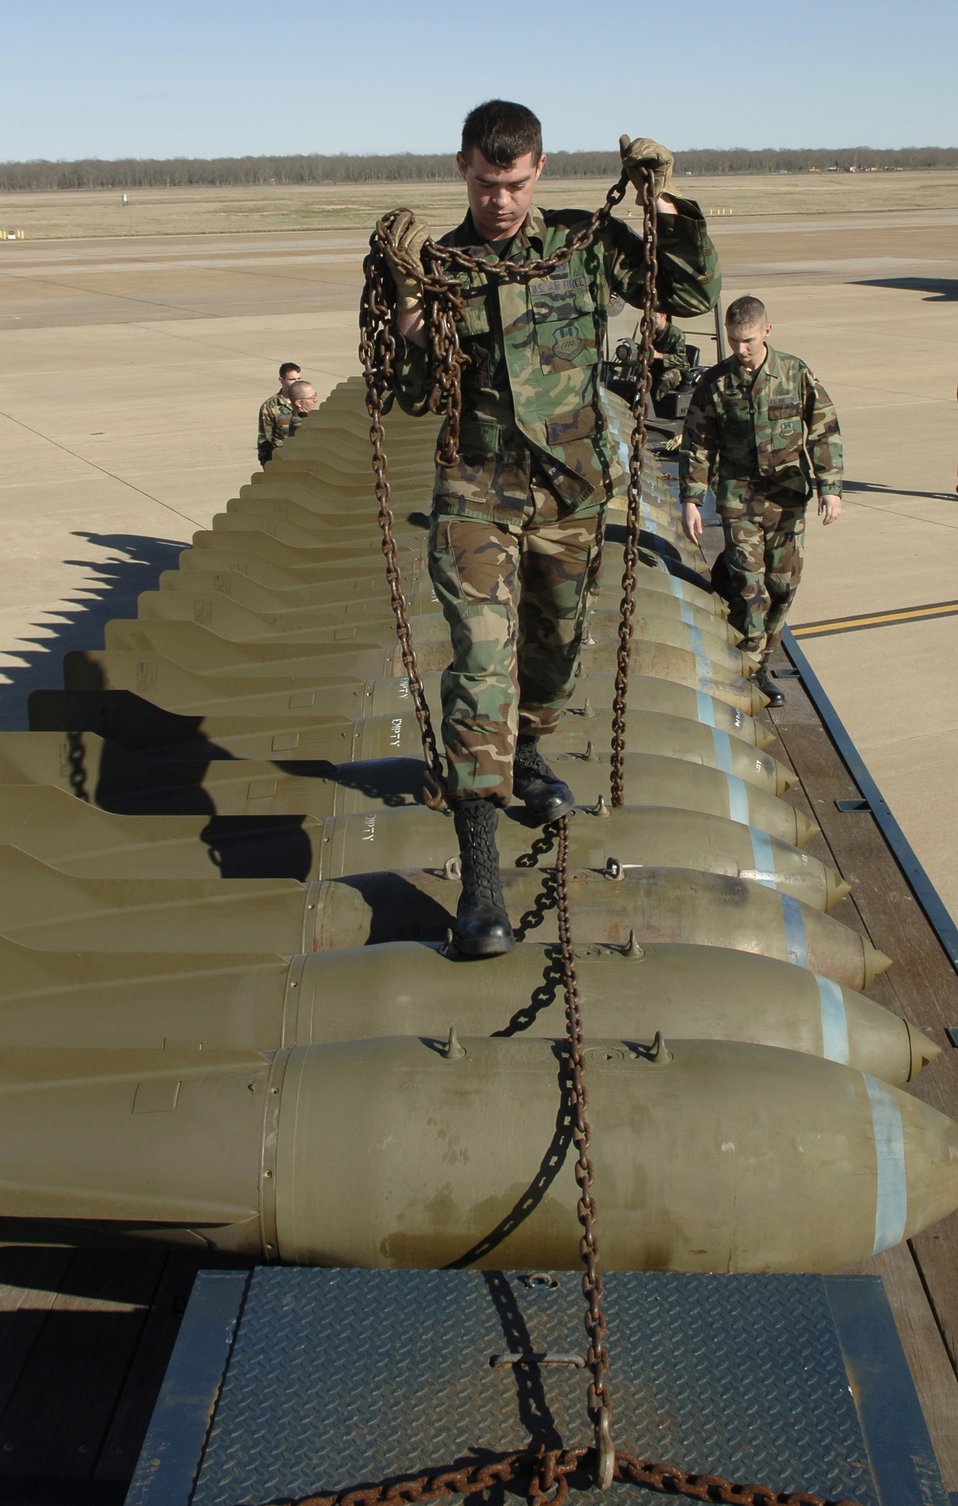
Display of might

BARKSDALE AIR FORCE BASE, La. (AFPN) -- Airman 1st Class Kevin J. Penwell prepares M-117 bombs for unloading. The munitions are set up for display with the B-52 Stratofortress to show its full capabilities. Airman Penwell is with the 2nd Munitions Squadron here.